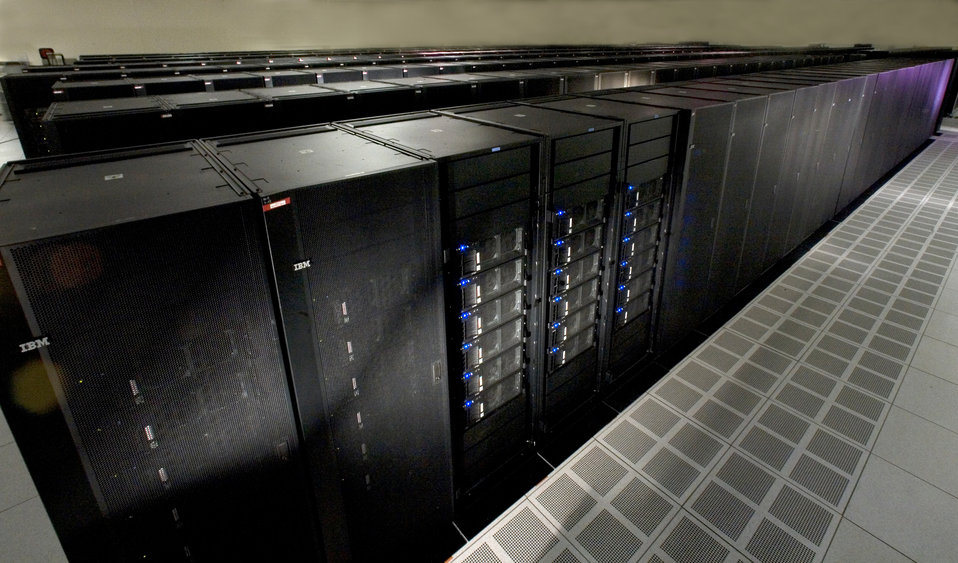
ROADRUNNER BASE CAPACITY SYSTEM AT LOS ALAMOS NATIONAL LABORATORY (LANL) IS NOW AT MORE THAN 70 TERAFLOPS OPERATING SPEED.

Roadrunner, a hybrid supercomputer, uses a video game chip to propel performance to petaflop/s speeds capable of more than a thousand trillion calculations per second.